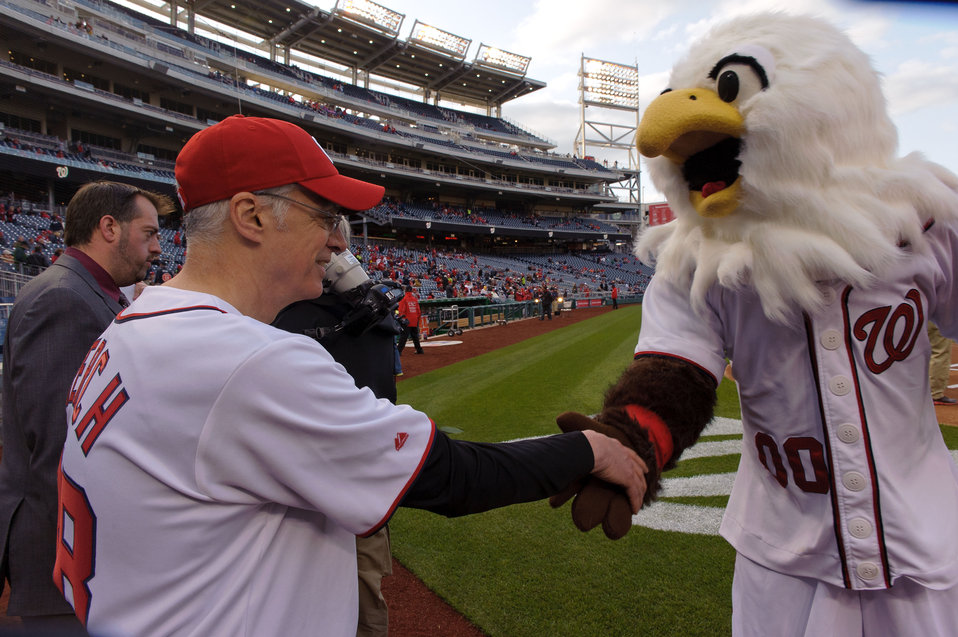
April 22, 2013 - Mascot Screech welcomes EPA Acting Administrator Bob Perciasepe to Nationals Stadium

In celebration of Earth Day, Acting Administrator Bob Perciasepe threw out the first pitch and reminded fans about the importance of recycling at Nationals Stadium. During the game volunteers collected recyclable food and beverage containers. Learn more

Keep up with our Acting Administrator @ www.facebook.com/EPAadmin